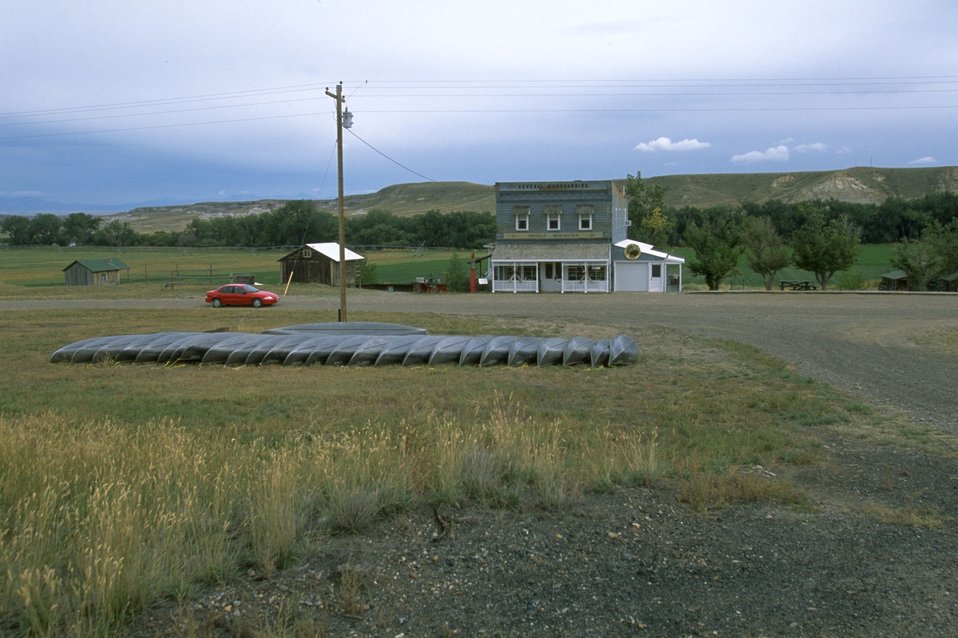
Virgelle Merchantile near Loma